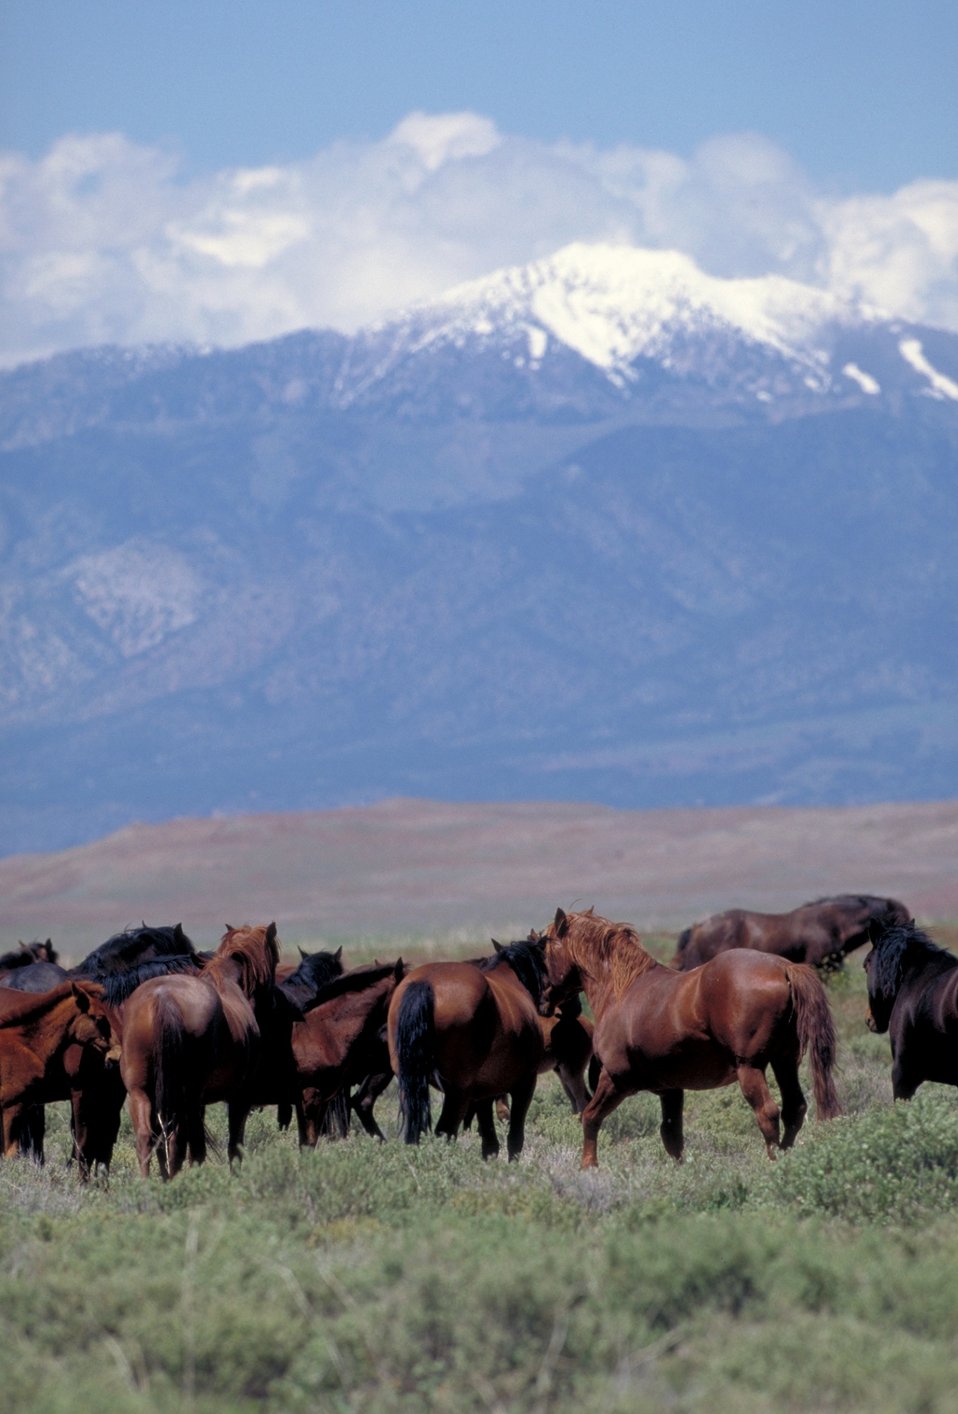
Onaqui Herd near Dugway, Utah.